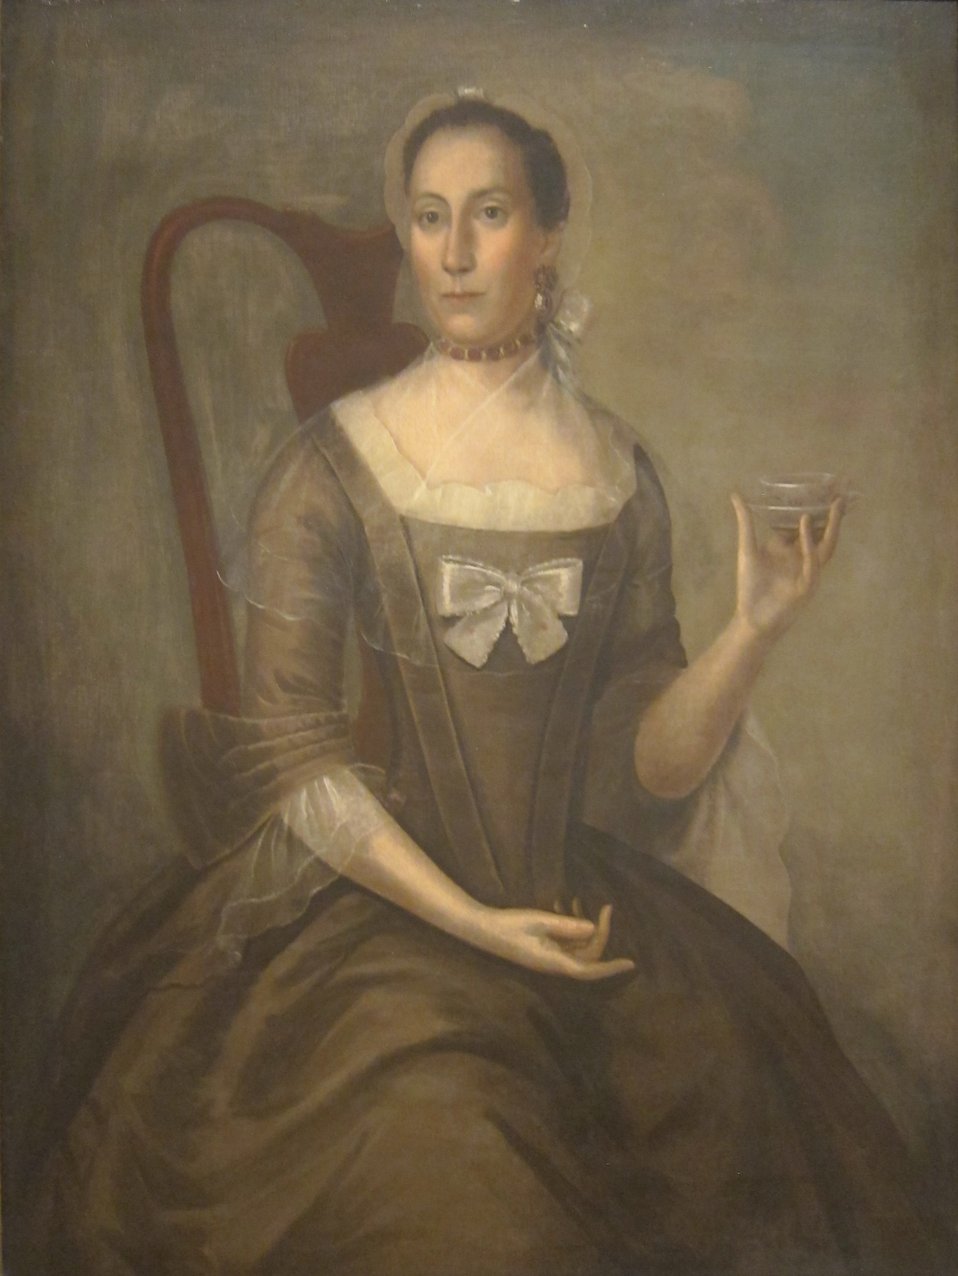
'Mrs. Nathaniel Loring (Mary Gyles)', oil on canvas painting by Joseph Badger, c. 1760-63, Dayton Art Institute